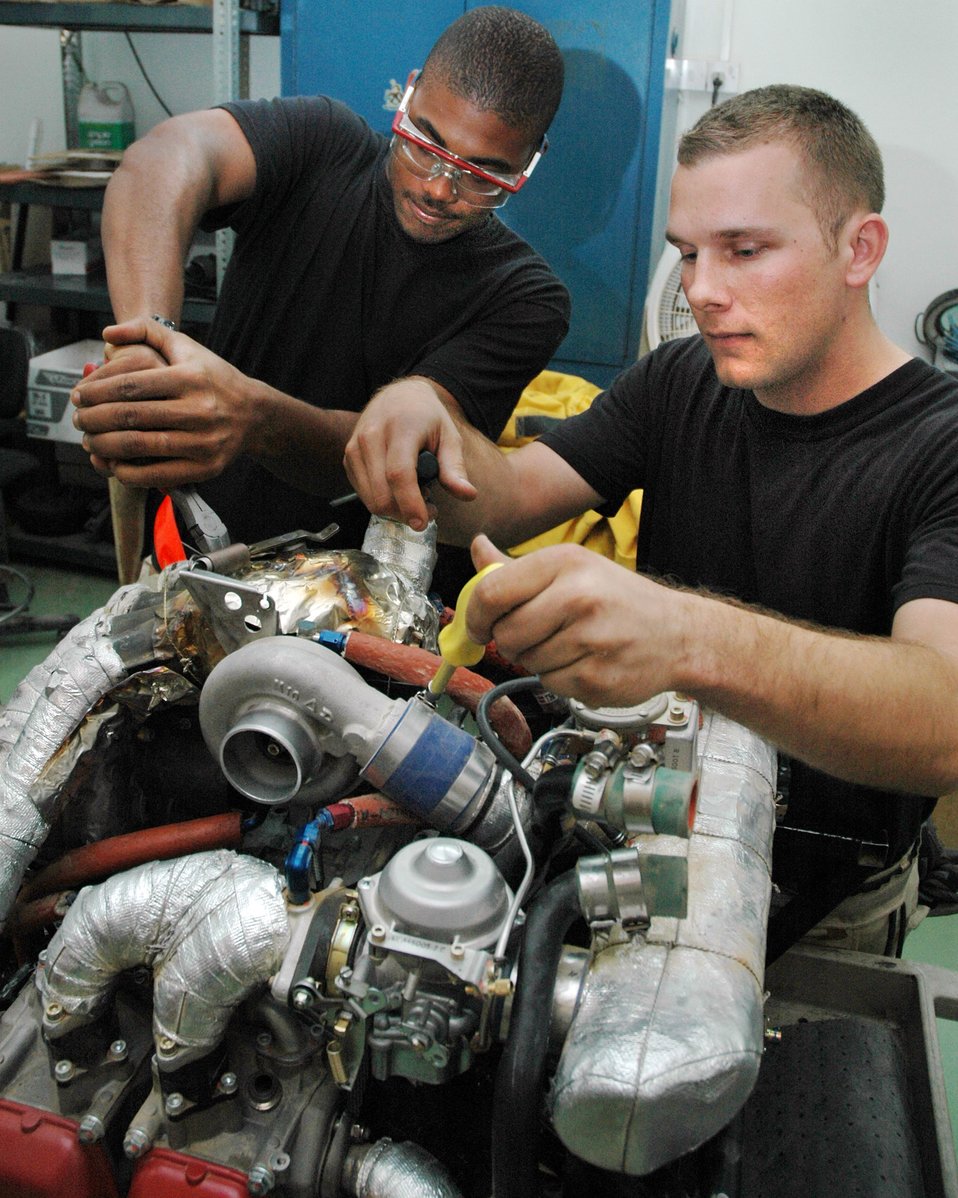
Keeping Predator primed and ready

BALAD AIR BASE, Iraq -- Senior Airmen Jose Peterson (left), and Paul Rudolph remove components from the engine of an MQ-1 Predator unmanned aerial vehicle as part of the aircraft's periodic maintenance. Predators operating from here provide armed reconnaissance for battlefield commanders throughout Iraq. Both Airmen are crew chiefs with the 46th Aircraft Maintenance Unit here deployed from Creech Air Force Base, Nev.